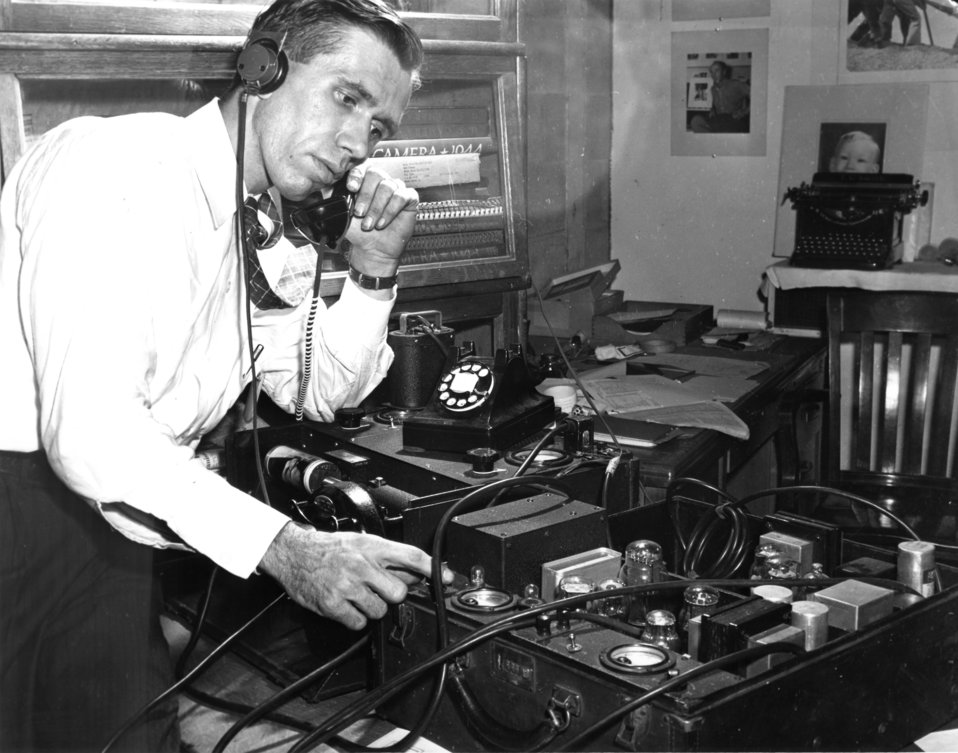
Notable persons at Oak Ridge